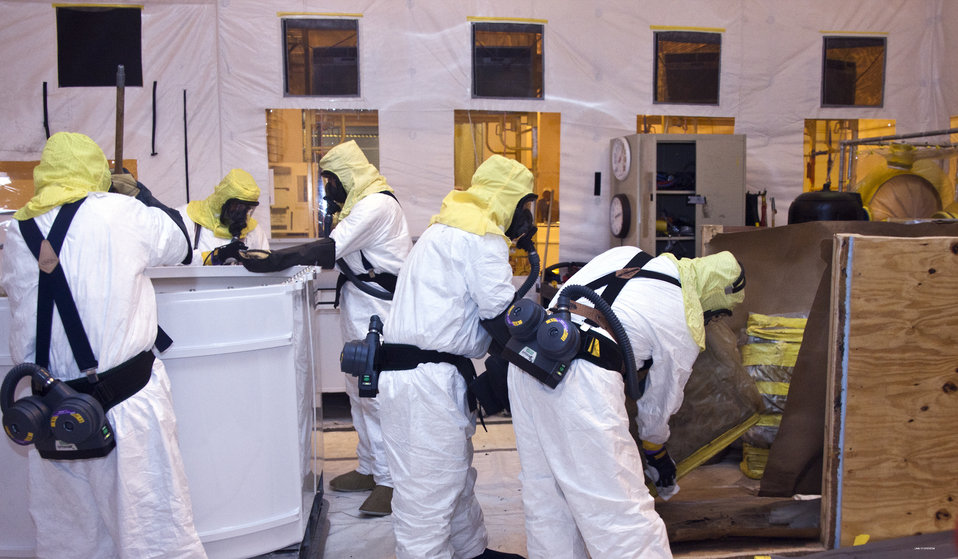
Los Alamos National Laboratory Ahead of Schedule Processing Waste in Large Boxes

Crews repackage waste from a fiberglass reinforced plywood box into a container that can be shipped to the Waste Isolation Pilot Plant.